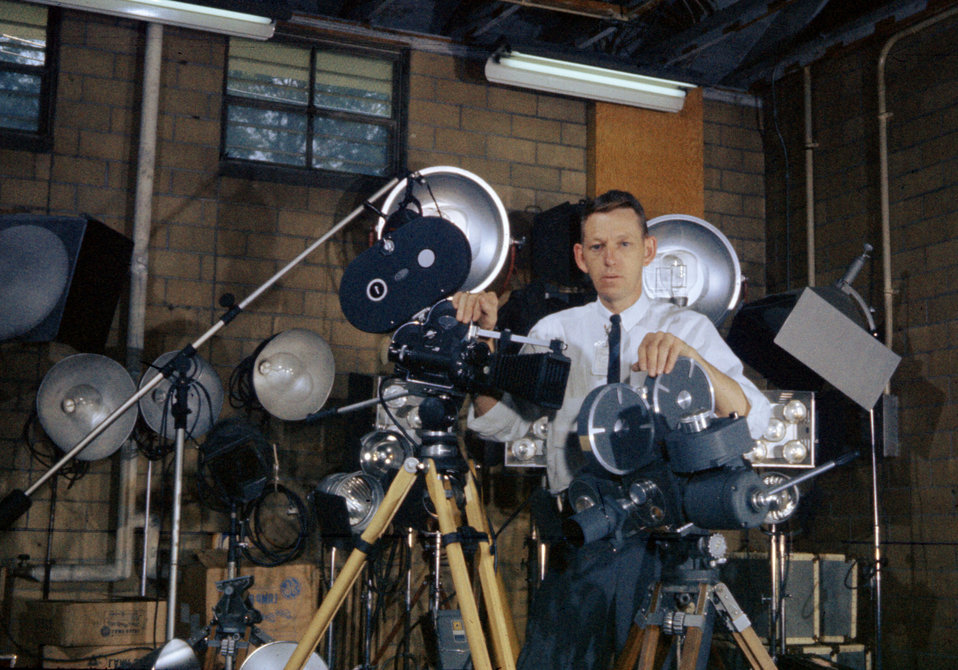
Ed Westcott with film making Equipment Oak Ridge

Ed Westcott the first AEC government photographer in Oak Ridge poses with his motion picture cameras and lights in Bld. 2714 in in Oak Ridge Tennessee 1960